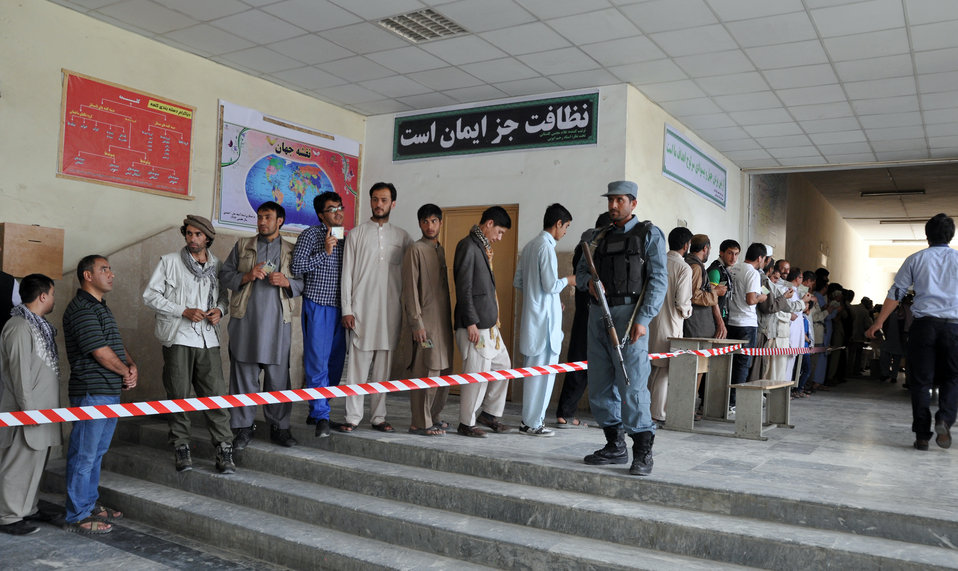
Voters queuing up in front of a polling center in Kabul.